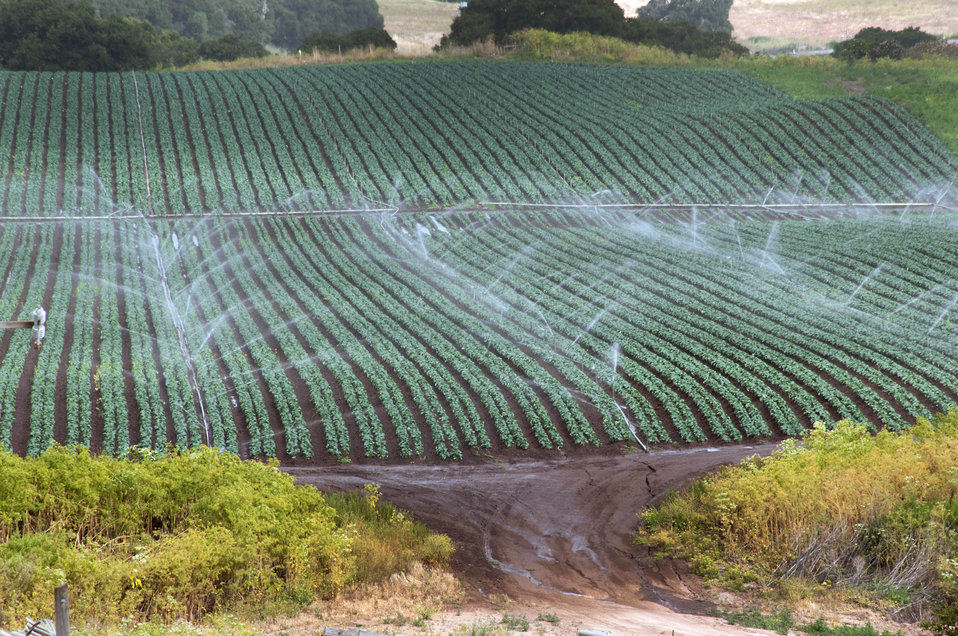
Conventional sprinkler irrigation at Leafy Greens in the Salinas Valley of California operated by farmer Tom Heess on Thursday, June 16, 2011. Leafy Greens grows row crops of lettuce, broccoli, cauliflower sweet peas and seed beans. He uses rotational crop plantings to control weeds and plant disease. When a plot of land is at rest, he plants a cover crop of barley and rye grass because the roots hold the topsoil reducing erosion of the soil. He is converting his irrigation system from conventional sprinklers (pictured) to micro irrigation. The conventional sprinkler system produces runoff and erosion of the soil (seen in foreground) while the micro irrigation system has little or no erosion, less maintenance, an easier harvest and less water is needed. When seasonal rains produce runoff, the silt that flows with it is caught in sediment ponds (left and right of pathway). The ponds have grass, bushes and trees to hold the structure and allow the silt to settle. Spillways lead to holding ponds and eventually the Salinas River, a tributary of the Monterey Bay National Marine Sanctuary. To date, because of its design and efficiency, no water has made it to the river.